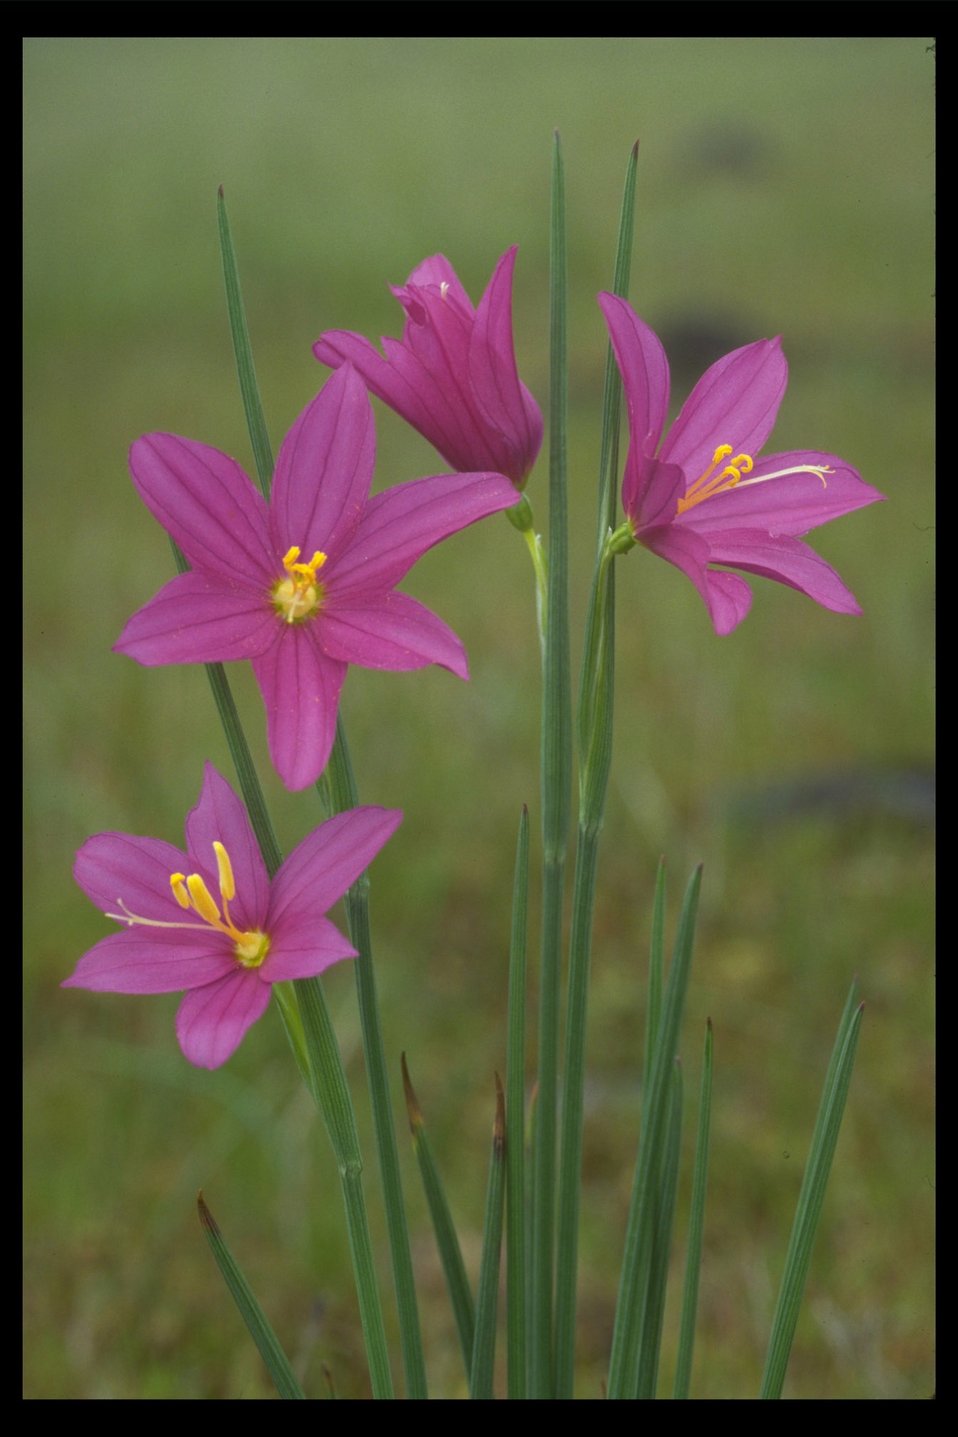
Grass Widow (Sisyrinchium douglasii) in the Upper Table Rock area.